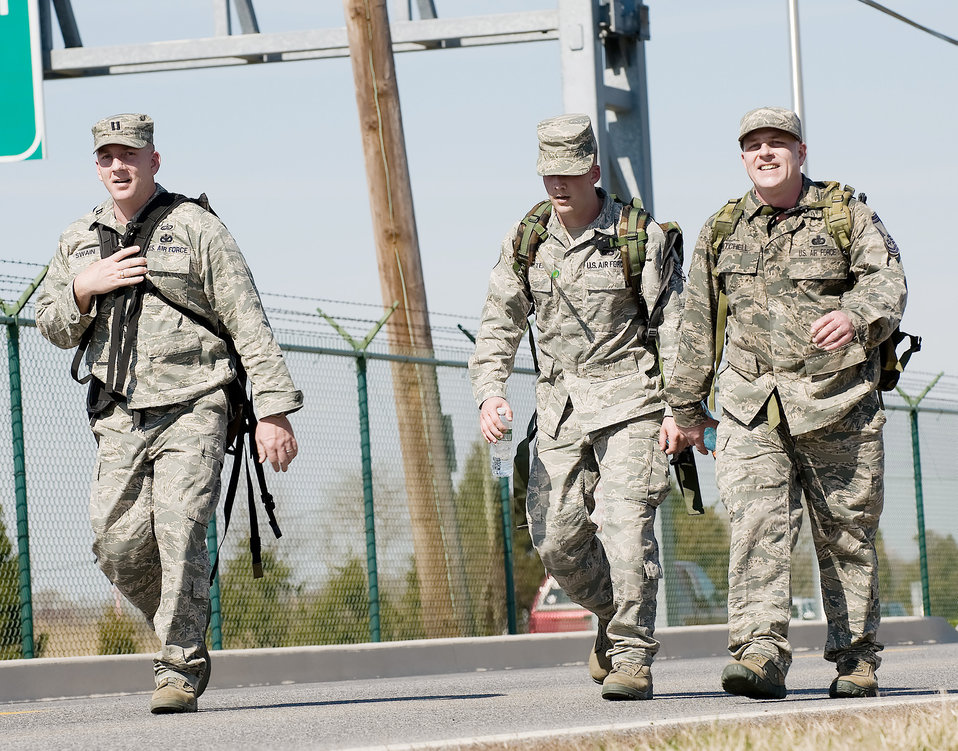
Airmen participate in ruck march

Capt. Gordon Swain (from left), Senior Airman Jason Saulter and Senior Master Sgt. Richard Mitchell participate in the 436th Security Forces Squadron's 11th Annual Ruck March held March 20, 2010, at Dover Air Force Base, Del. The annual 6.2 mile march is a fundraiser to honor the veterans of the Korean War who fought in the Battle of the Chosin Reservoir. Captain Swain is the Air Force Mortuary Affairs Operations Center dignified transfer officer in charge, Airman Saulter is a AFMAO dignified transfer team member, and Sergeant Mitchell is the AFMAO uniforms section chief.